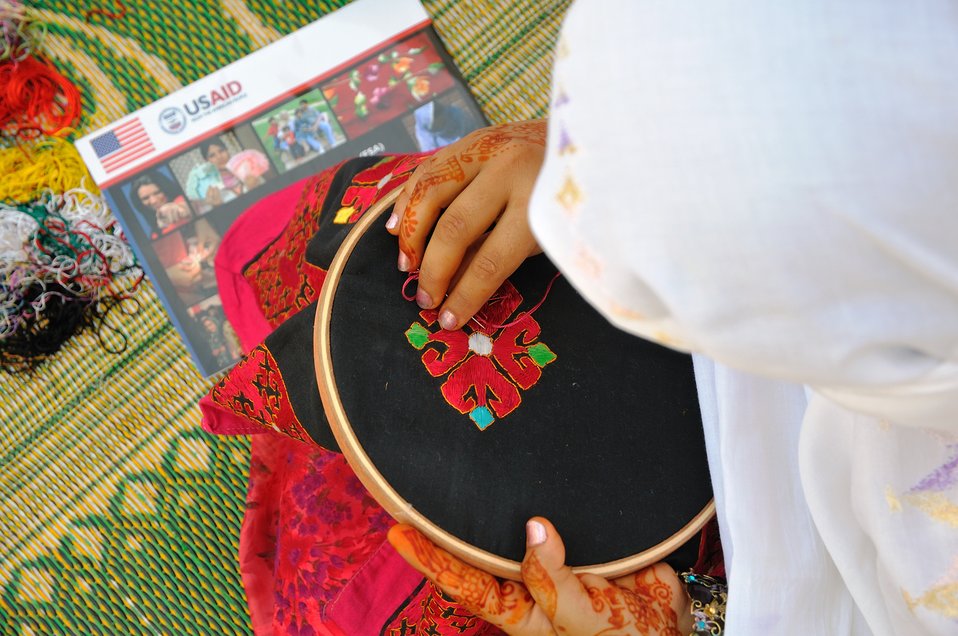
Generating new products

Swat, May 22, 2012 - Pakistan's top retail outlet Generation is working with Entrepreneurs beneficiaries to produce hand embellished fabric worth PKR 485,000. So all Generation fans out there, next time you buy anything from your favourite boutique, let know that you're contributing to our efforts in supporting these women in improving their livelihoods